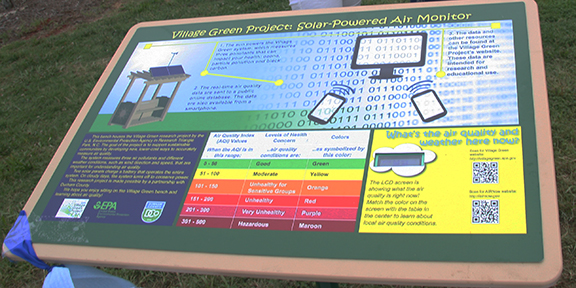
June 2013 - Village Green Project informative sign

Visitors to the library can learn about the monitoring system, get real-time air quality conditions and access the database using a QR code on the display.